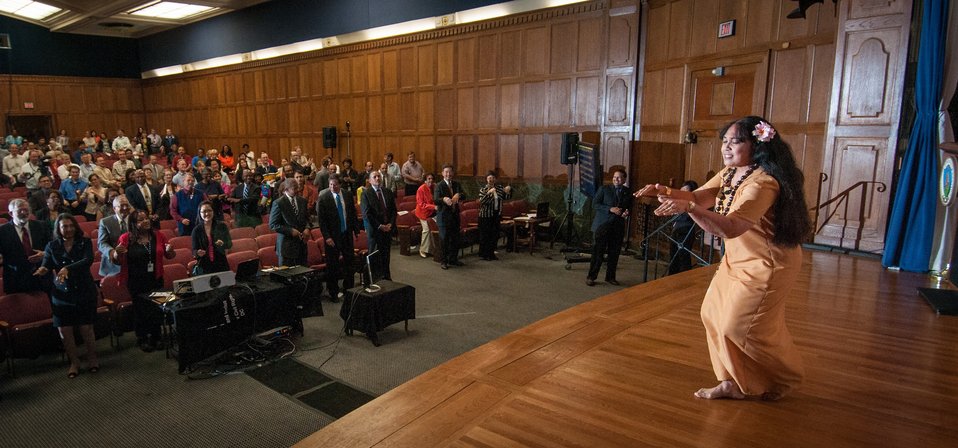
U.S. Department of Agriculture’s (USDA) Saleia Afele Faamuli, invites the audience to their feet to learn to hula dance, during the USDA Asian Pacific American Heritage Month Observance, at the USDA headquarters in Washington, D.C., on Thursday, May 23, 2013. The Hawaiian hula dance is one of the many valued cultural activities from the Pacific Islands, and represents part of This year’s theme: “Building leadership; Embracing the Cultural Values and Inclusions.”